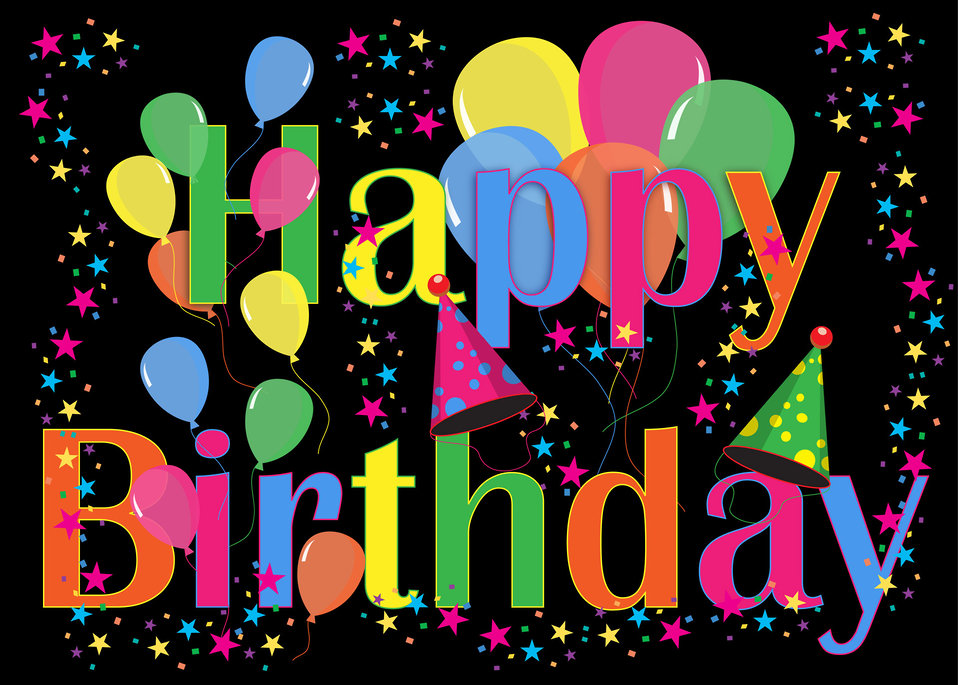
Birthday celebration card

Happy birthday card for scrapbooking.